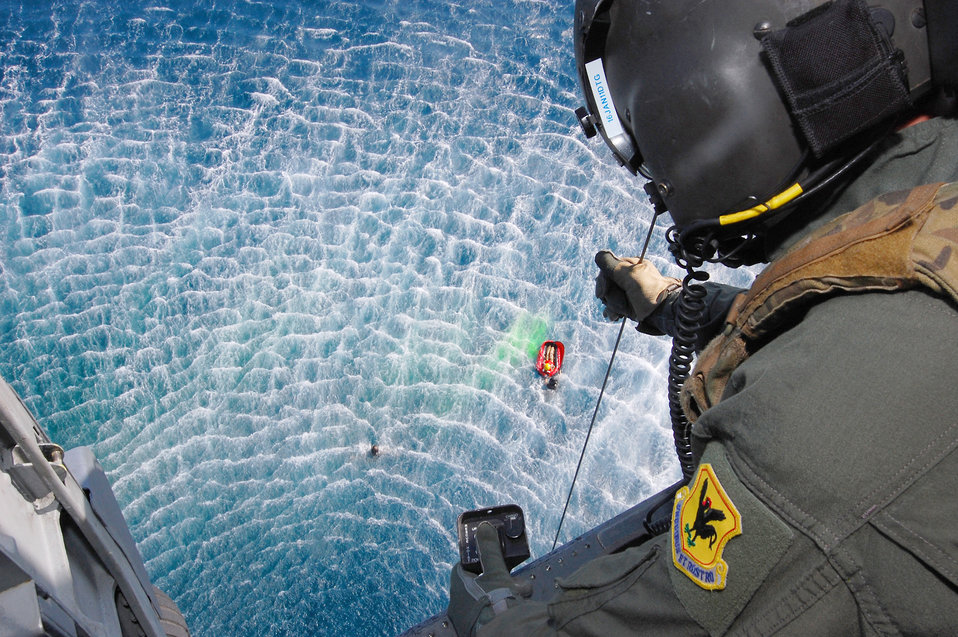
Keen Sword 2011

Senior Airman Jeremy Garrett lowers a stoke down into the waiting hands of the pararescuemen below during the Keen Sword exercise Dec. 6, 2010, at Kadena Air Base, Japan. Keen Sword 2011 will include an estimated 10,500 U.S. participants from the Army, Navy, Air Force and Marines. Airman Garrett is a flight engineer with the 33rd Rescue Squadron.